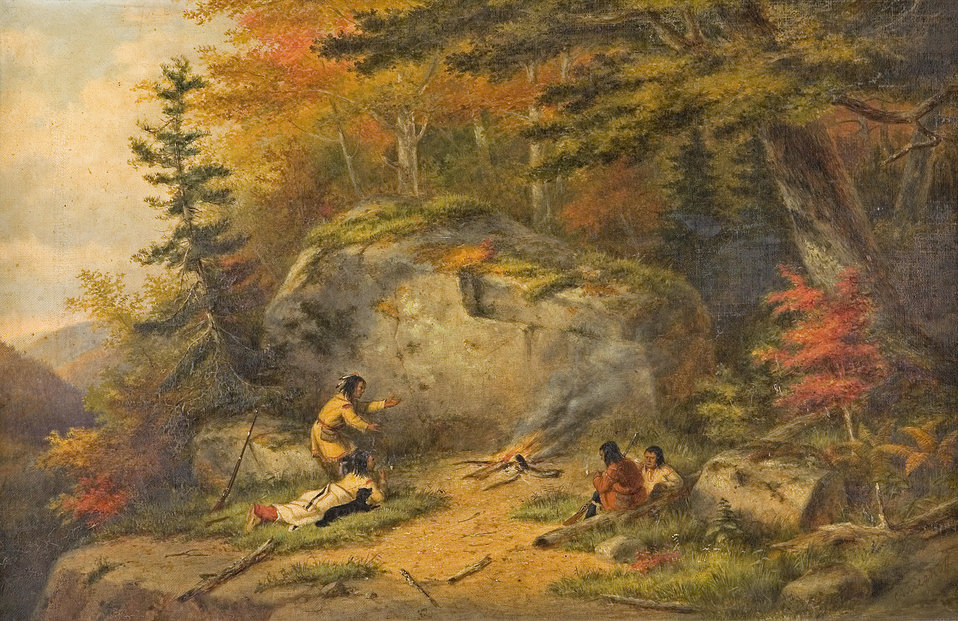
'Autumn in West Canada, Chippeway Indians', oil painting by Cornelius Krieghoff, 1865